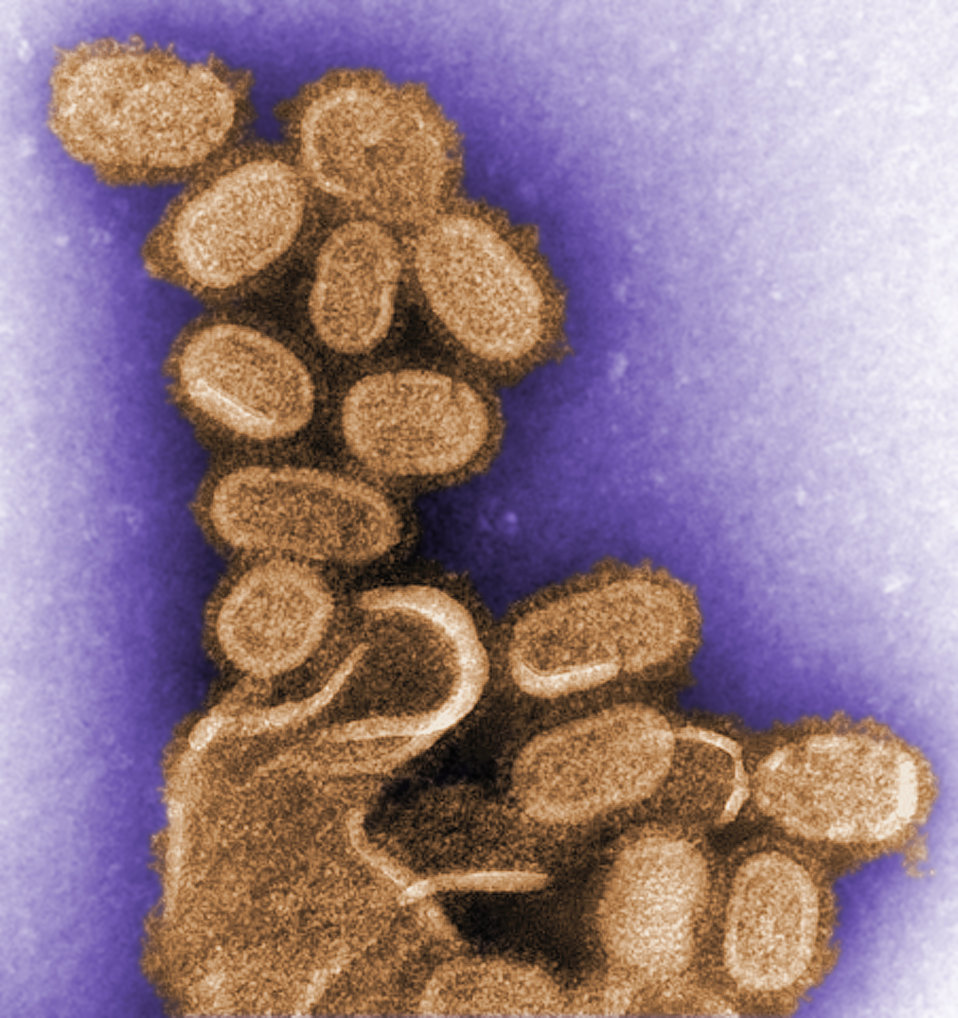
This negative stained transmission electron micrograph (TEM) shows recreated 1918 influenza virions that were collected from supernatants of 1918-infected Madin-Darby Canine Kidney (MDCK) cells cultures 18 hours after infection. To separate these virions, the MDCK cells are spun down (centrifugation), and the 1918 virus in the fluid is immediately fixed for negative staining. The solid mass in lower center contains MDCK cell debris that did not spin down during the procedure. See PHIL 8160 for a black and white version of this micrograph.